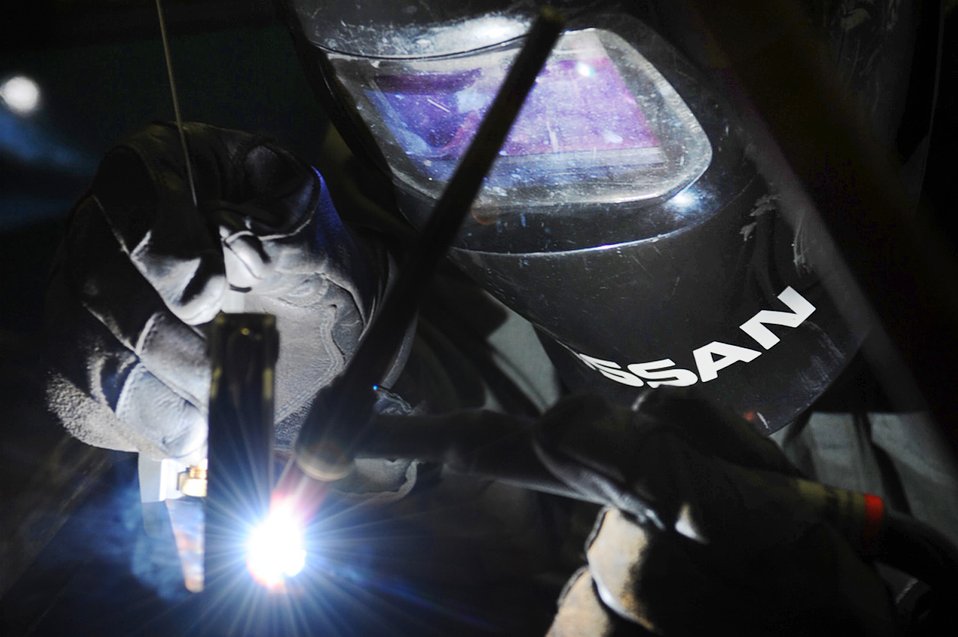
Tungsten inert-gas welding

Airman 1st Class Webb Travis uses tungsten inert gas to weld a panel for a bomb loader during repairs Jan. 26, 2011, at Ellsworth Air Force Base, S.D. Tungsten inert-gas welding is a precise form of welding that can be performed on a variety of metals. Airman Travis is an aircraft metals technology technician assigned to the 28th Maintenance Squadron.